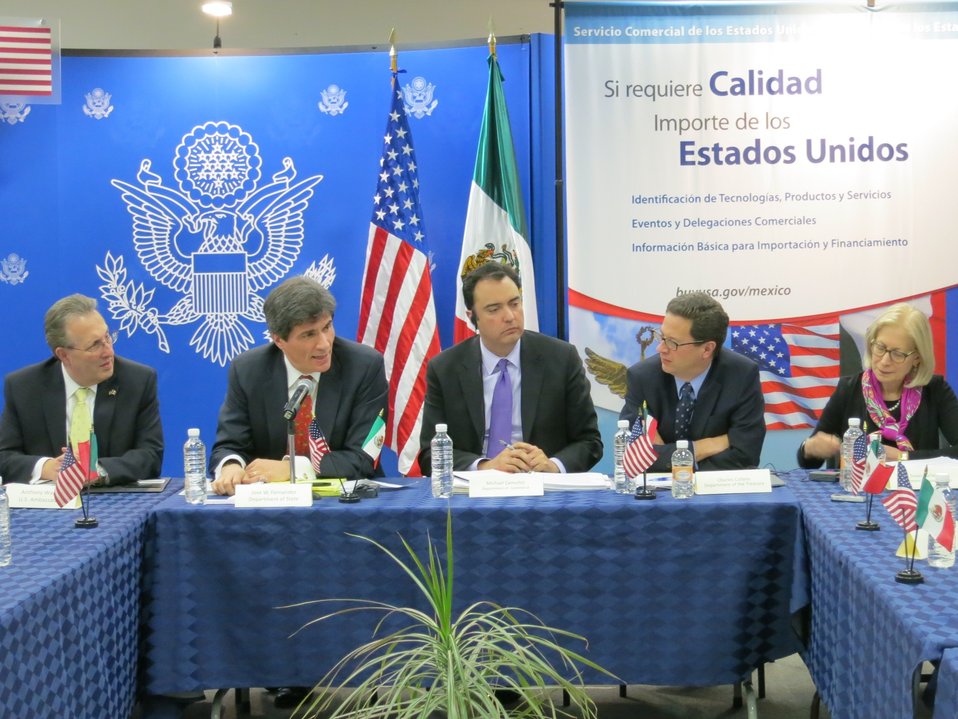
Assistant Secretary for International Finance Charles Collyns visits Mexico City with group to deepen economic relations

(from l. to r.) U.S Ambassador to Mexico Anthony Wayne, the State Department's Assistant Secretary for Economics and Business Affairs Jose Fernandez, the Commerce Department's Assistant Secretary for Market Access and Compliance Michael Camuñez , Treasury's Assistant Secretary for International Finance Charles Collyns, and the Transportation Department's Assistant Secretary for Aviation and International Affairs Susan Kurland hold a pen and pad briefing during their visit to Mexico City, Mexico.